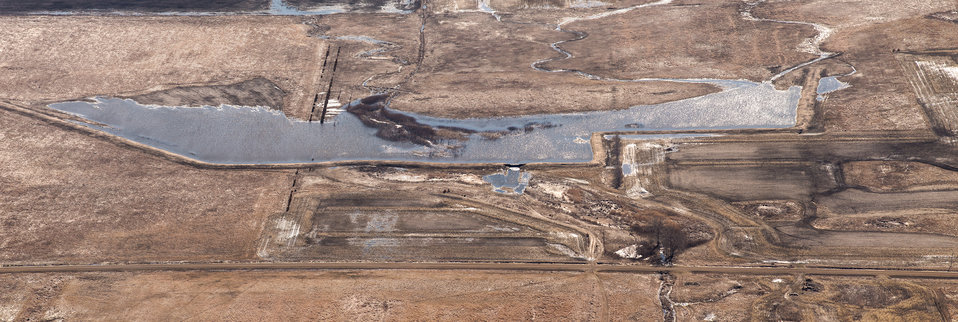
Ehlert North U.S. Department of Agriculture (USDA) Natural Resources Conservation Service (NRCS) Wetland Reserve Program (WRP) in Wilkin County, MN, on Tuesday, April 30, 2013. For information about this and other programs from the USDA Red River Basin Initiative (RRBI) please see www.mn.nrcs.usda.gov/news/features13/RRBI.html.